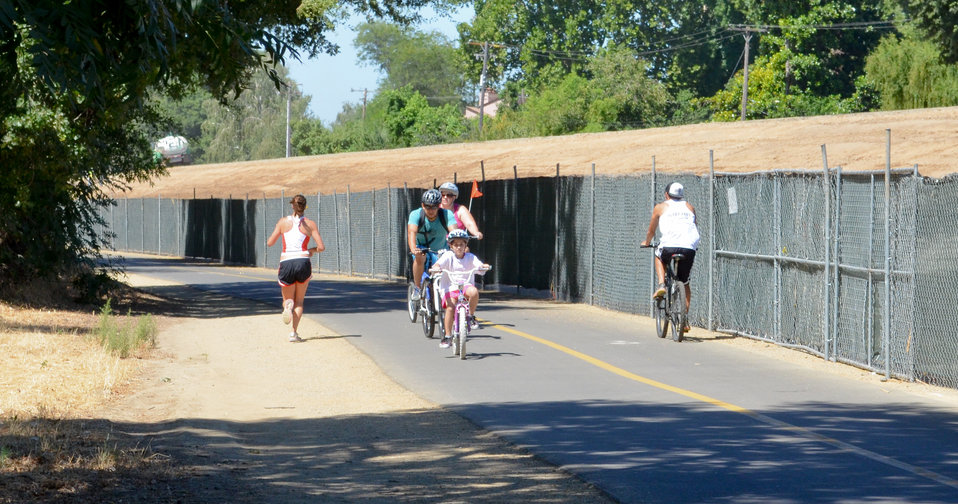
American River multi-use trail

The 33-mile multi-use trail, shown Aug. 2, 2012, remains open throughout construction along the American River in Sacramento, Calif. After scheduled completion this October, the Howe Avenue levee raise project will further reduce area flood risk by raising and reinforcing more than 4,000 feet of levee along the American River in Sacramento, Calif.